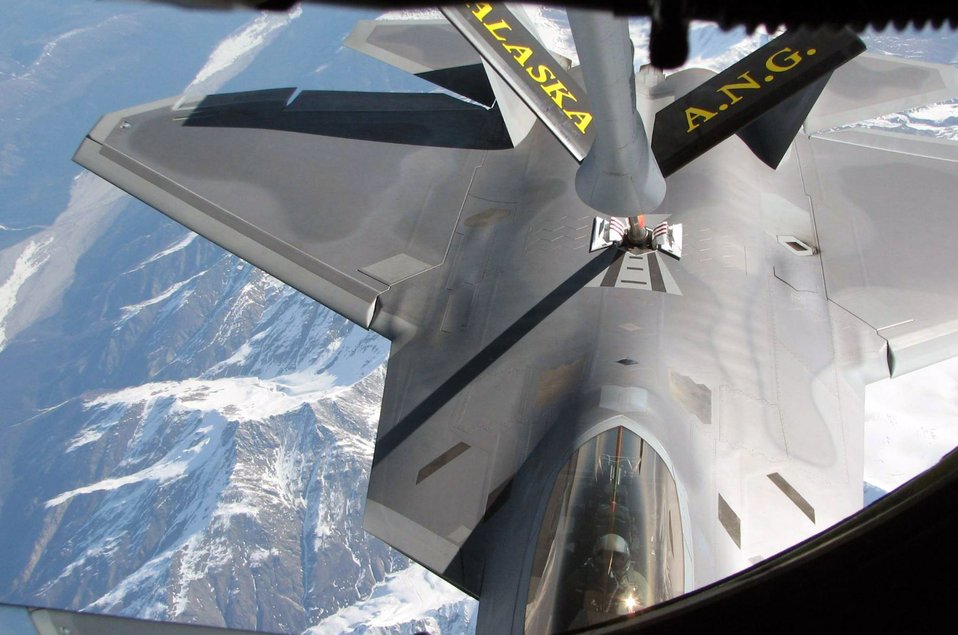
Alaska ANG KC-135s provide edge anytime, anywhere

An F-22 Raptor from the 3rd Wing at Elmendorf Air Force Base, Alaska, receives fuel from a KC-135 Stratotanker May 8 during Northern Edge 2008. The exercise, which began May 5 and concludes May 16, is designed to give Soldiers, Sailors, Airmen, Coast Guardsmen and Marines a chance to sharpen their skills prior to facing real-world combat scenarios. The KC-135 is part of the Alaska Air National Guard's 168th Air Refueling Wing from Eielson Air Force Base.